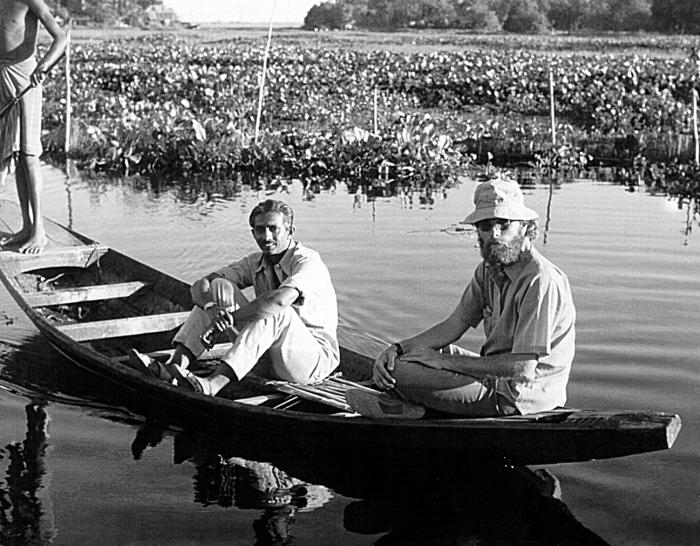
Here Jeff Koplan, M.D., M.P.H., and his counterpart are involved in smallpox-related field care in Bangladesh during the 1970's.